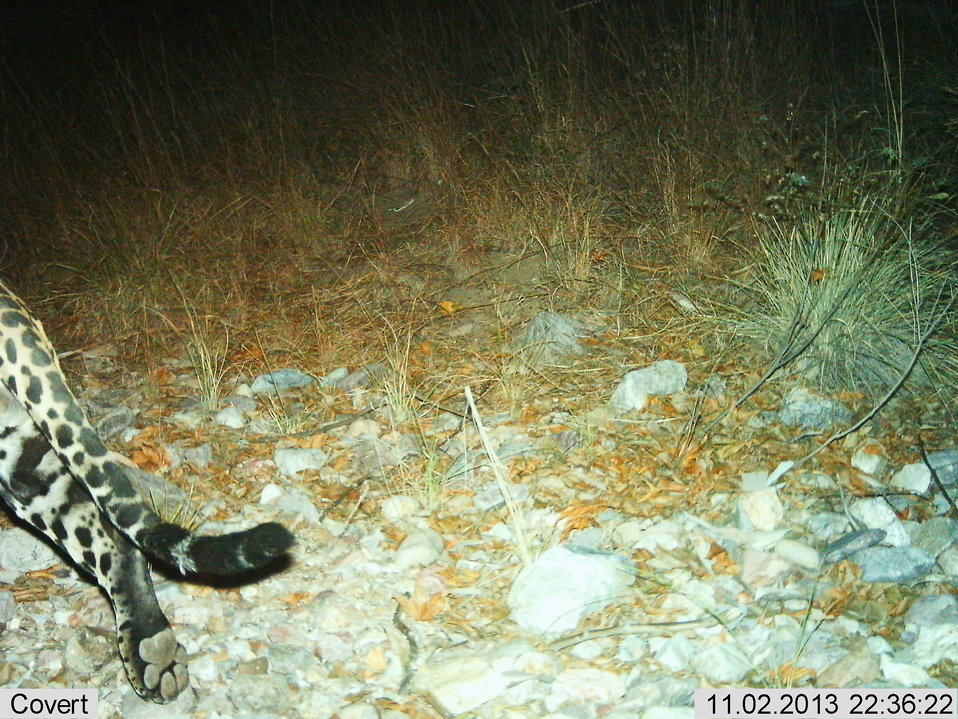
Male jaguar photographed by automatic wildlife cameras in the Santa Rita Mountains on November 2, 2013, as part of a U.S. Fish and Wildlife Service/Department of Homeland Security-funded jaguar survey conducted by University of Arizona. This is the second of three photos from November 2 at this location. This photo location is new but not far from previous photo detections.